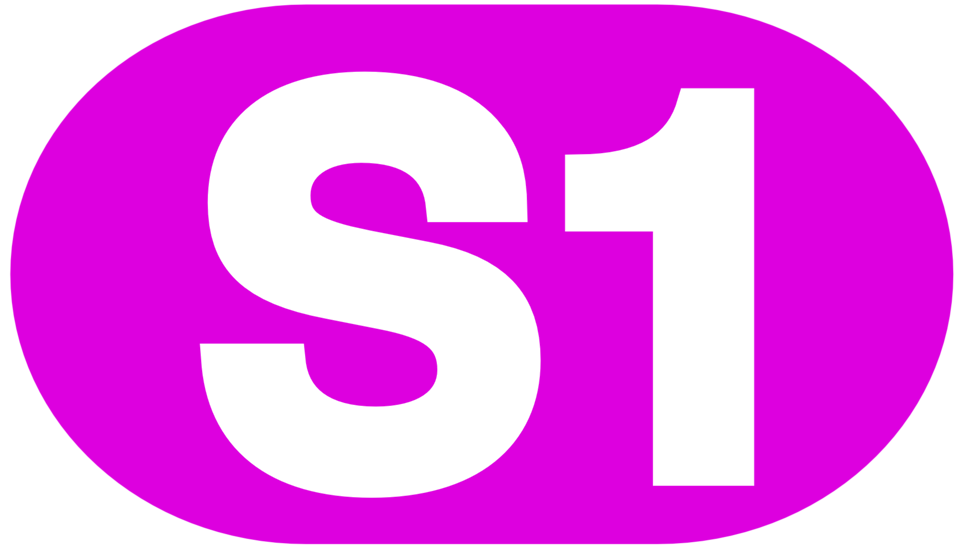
Deutsch: Logo S1 Rostock